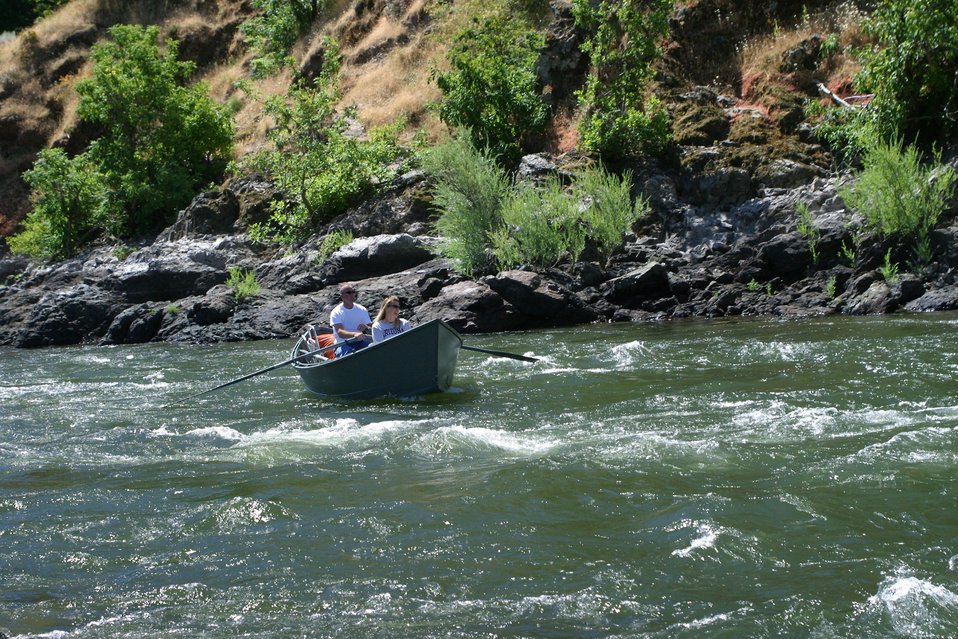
Drift boat below Hog Creek.